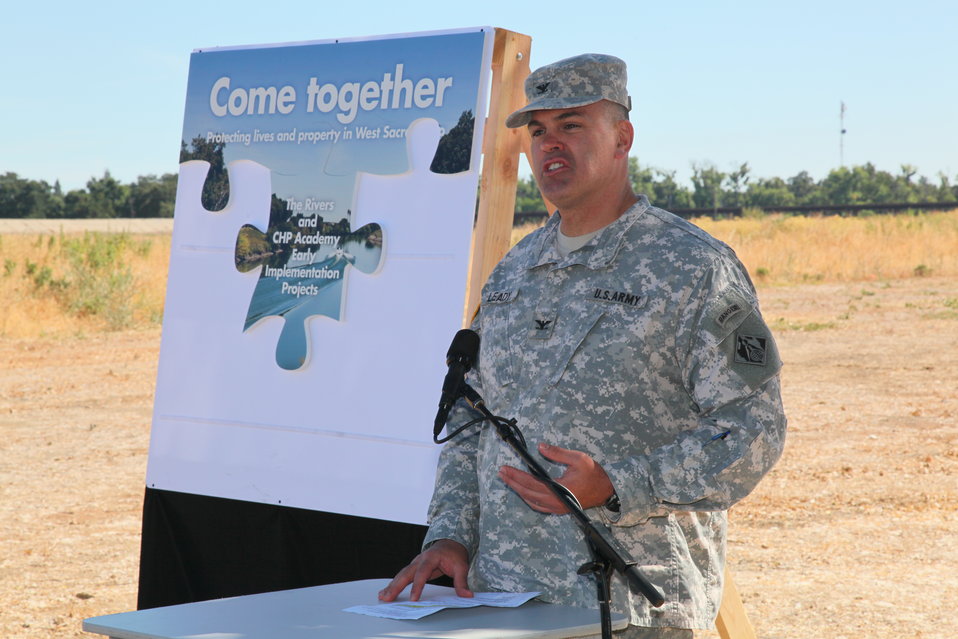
Celebrating West Sacramento levee improvements

U.S. Army Corps of Engineers Sacramento District commander, Col. Bill Leady, speaks at the celebration ribbon-cutting ceremony for the completion of levee improvements in West Sacramento, Calif., June 26, 2012. The $27 million projects, managed by the West Sacramento Area Flood Control Agency, improved the levees along the Sacramento Bypass and the Sacramento River in the north part of the city.